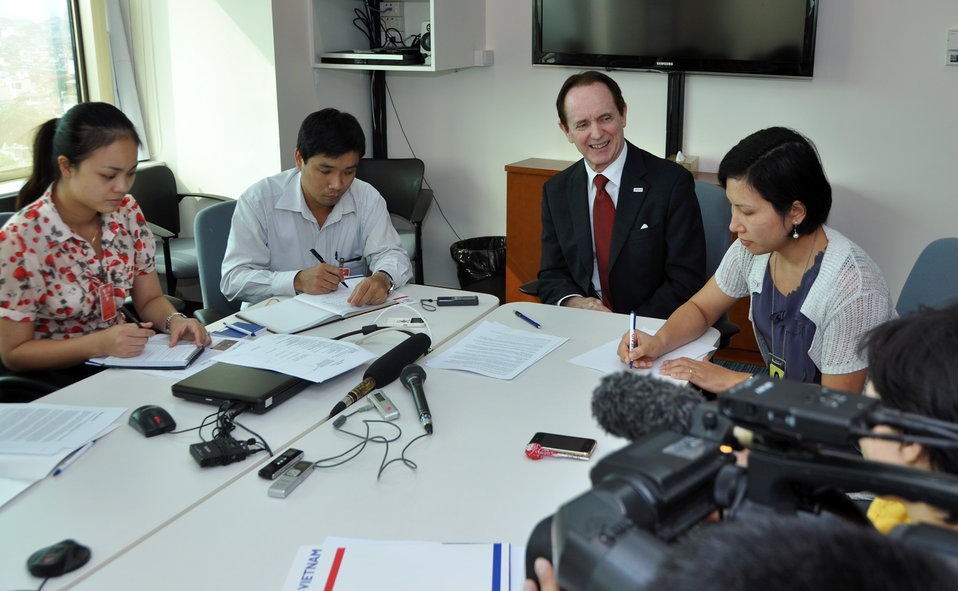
USAID MissionDirector Francis Donovan meets the press